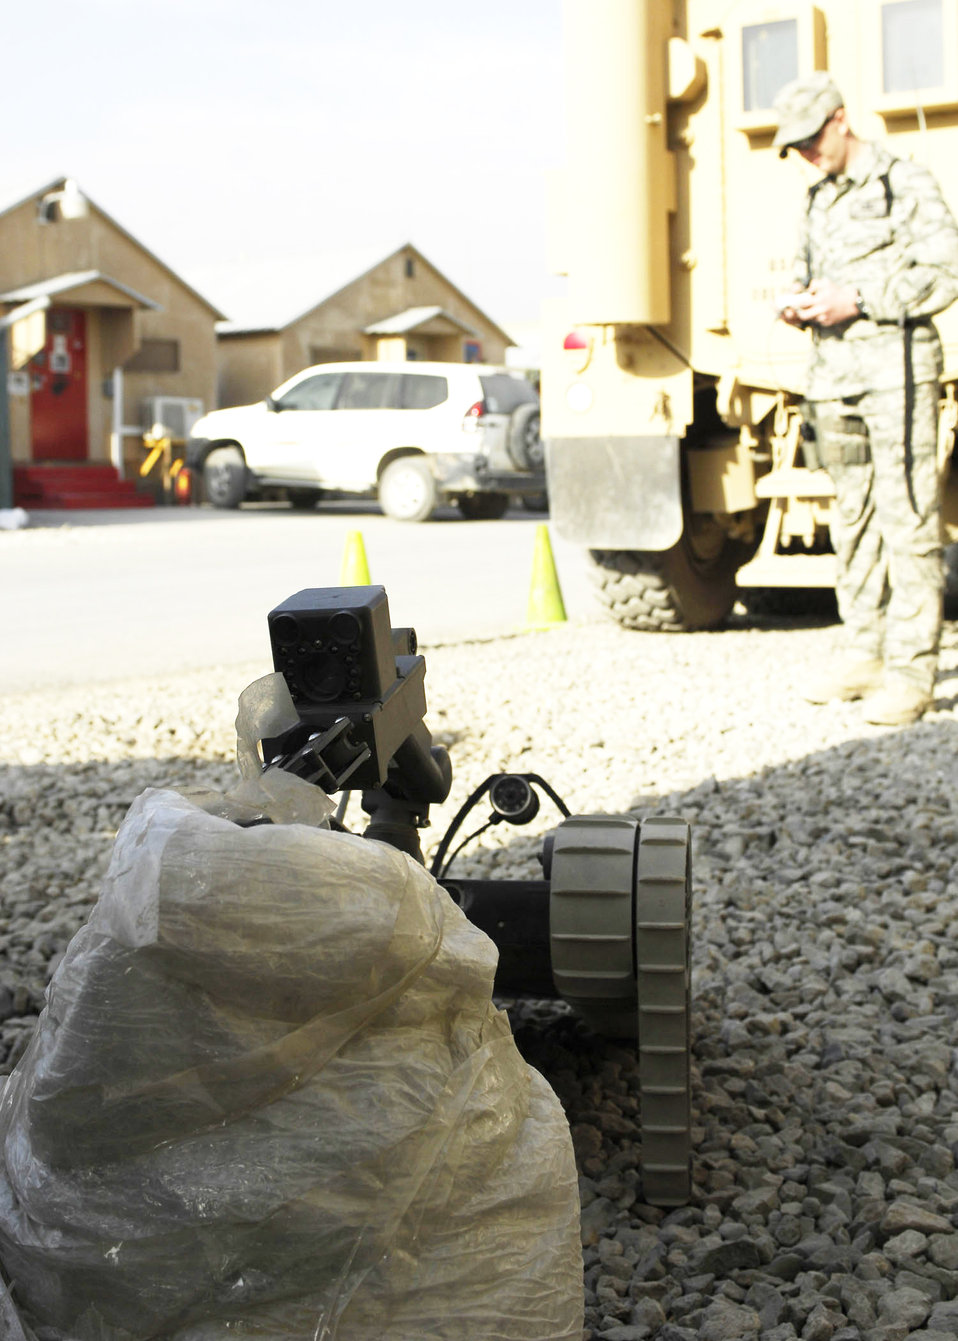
The weapons of warfare adapt with the age of Airmen

Senior Airman James Dobrynski, an explosive ordnance disposal technician at Bagram Airfield, Afghanistan, maneuvers a robot during training Oct. 26, 2009. The robot is being used to remove plastic around a mock improvised explosive device. Airman Dobrynski is a joint expeditionary tasked Airman to the 741st EOD Battalion. He is deployed from Luke Air Force Base, Ariz., and hails from St. Louis, Mo.